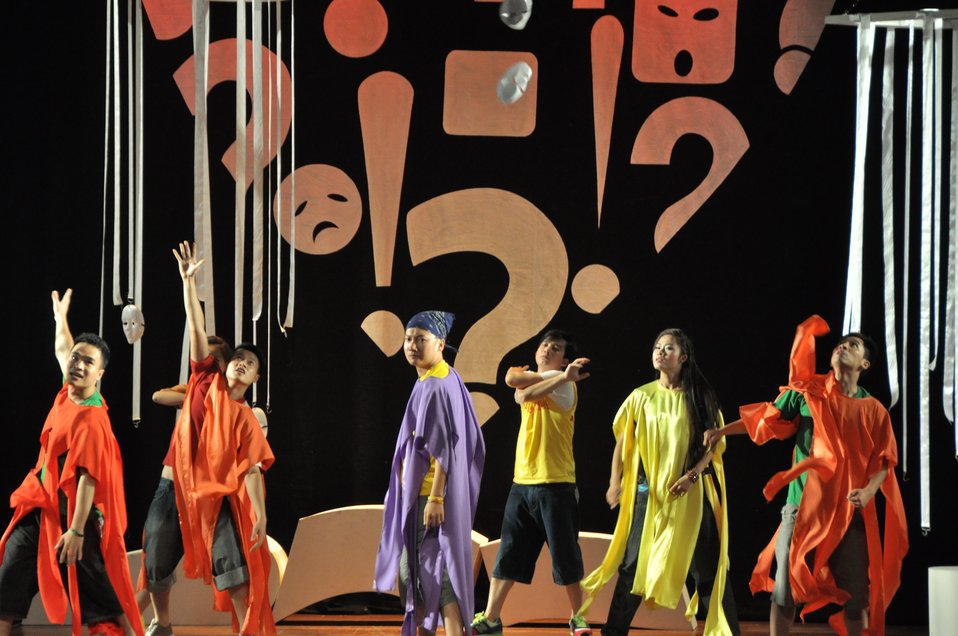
PEPFAR Musical Questions and Exclamations

Hanoi, May 17, 2013